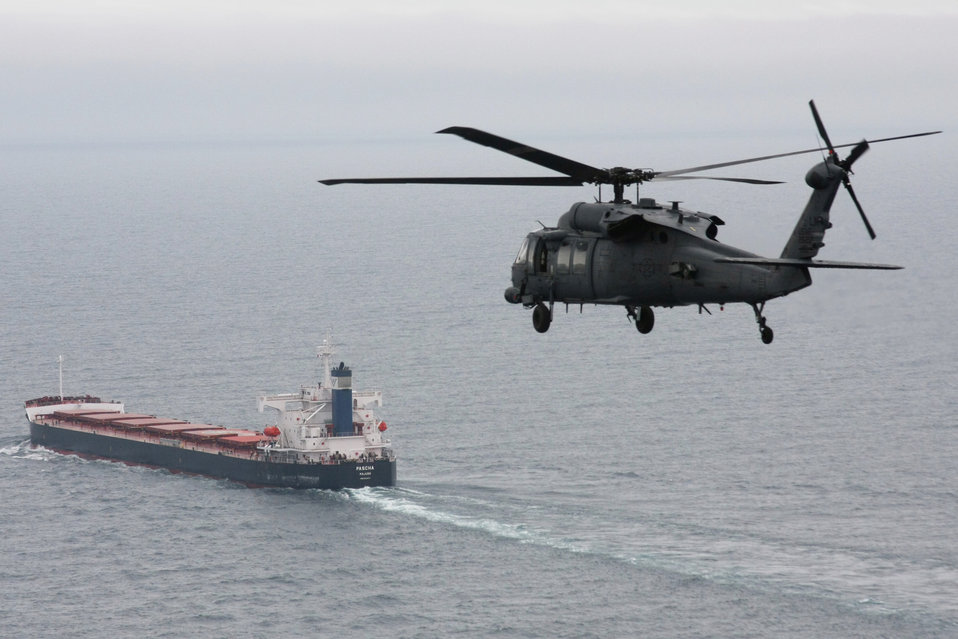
Crewmember stable after Airmen assist in rescue over Atlantic

A 56th Rescue Squadron HH-60G Pave Hawk from Royal Air Force Lakenheath, England, flies toward the cargo ship Pascha approximately 400 miles off of the west coast of Ireland June 26. Two helicopters from the squadron made the journey to save a sailor who was experiencing severe abdominal pain and required immediate medical evacuation. Two additional U.S. Air Force aircraft, a KC-135 Stratotanker from the 100th Air Refueling Wing and a MC-130P Combat Shadow from the 352nd Special Operations Group, both from RAF Mildenhall, England, supported the operation for refueling and communication purposes. A Nimrod, search and rescue aircraft, from the United Kingdom also played a critical role in the operation, providing real time communication and coordination between the ship and aircraft. The patient was delivered to an awaiting ambulance in Shannon, Ireland, and is in stable condition.